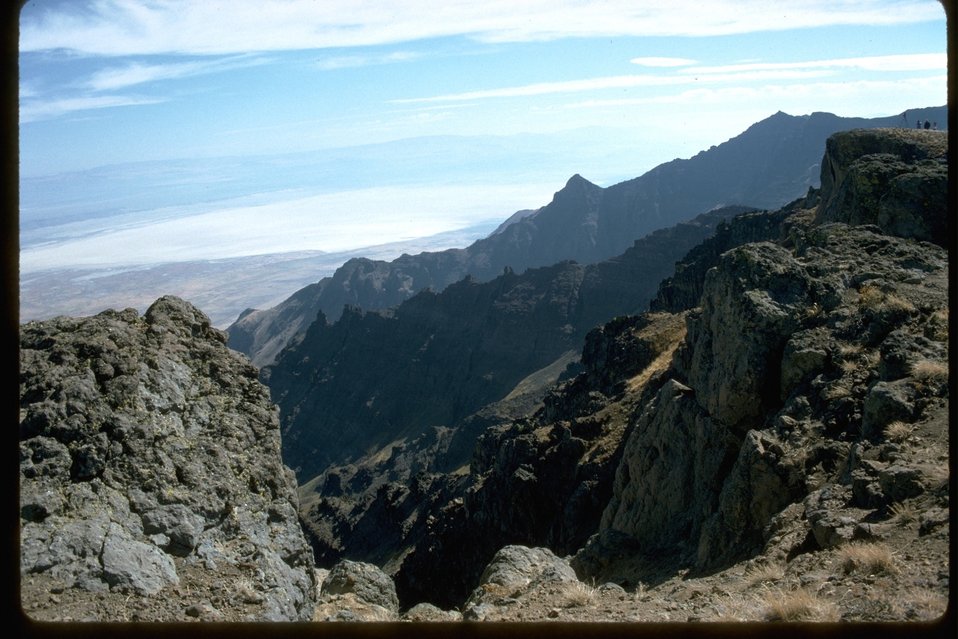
The East Face of Steens Mountain from the East Rim overlook.